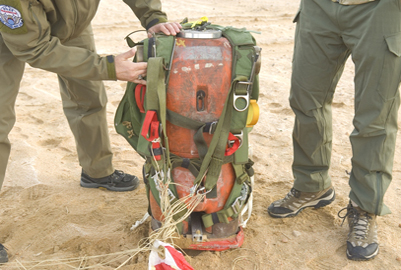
New parachute system

Members of the 418th Flight Test Squadron perform functional testing on the ground for the experimental parachute system called the Guardian Angel Advance Parachute System. GAAPS is a threefold parachute system, which includes a freefall parachute system, a static-line parachute and a tandem parachute system. The parachute's canopy is made with a special type of fabric designed to allow the user to land at high altitudes.